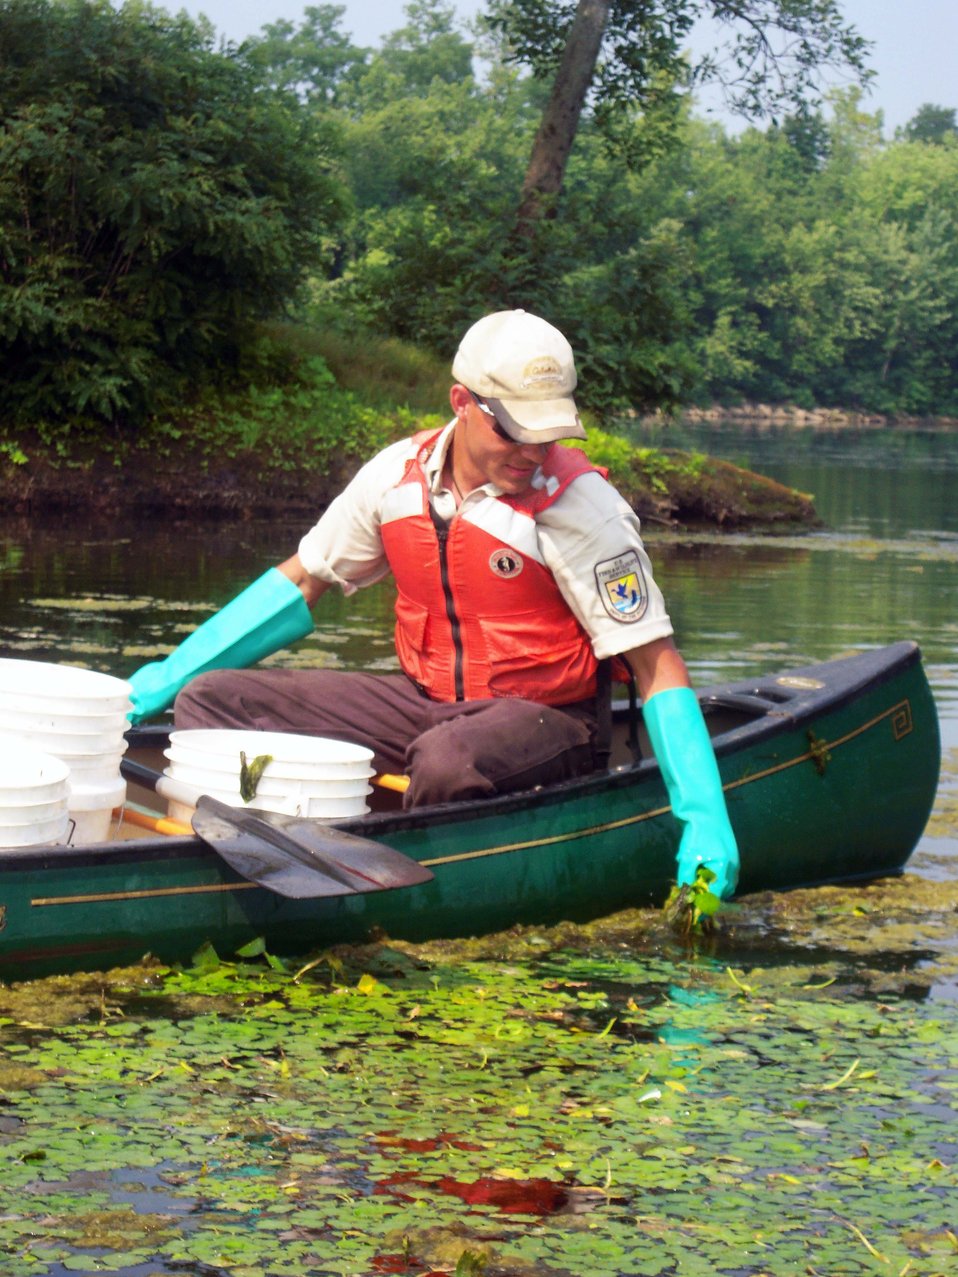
USFWS Employee Nate Bush

Nate Bush removing water chestnut.